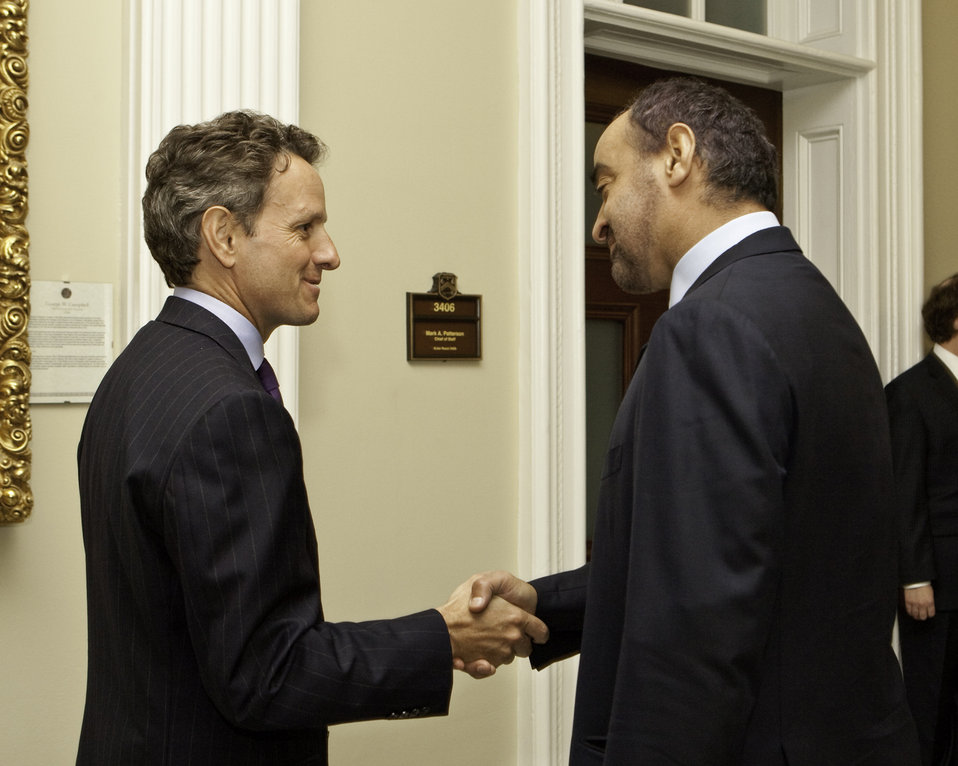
Crown Prince of Abu Dhabi Sheikh Mohamed bin Zayed Al Nahyan

On September 8, 2009, Secretary Geithner met with Crown Prince of Abu Dhabi Sheikh Mohamed bin Zayed Al Nahyan.